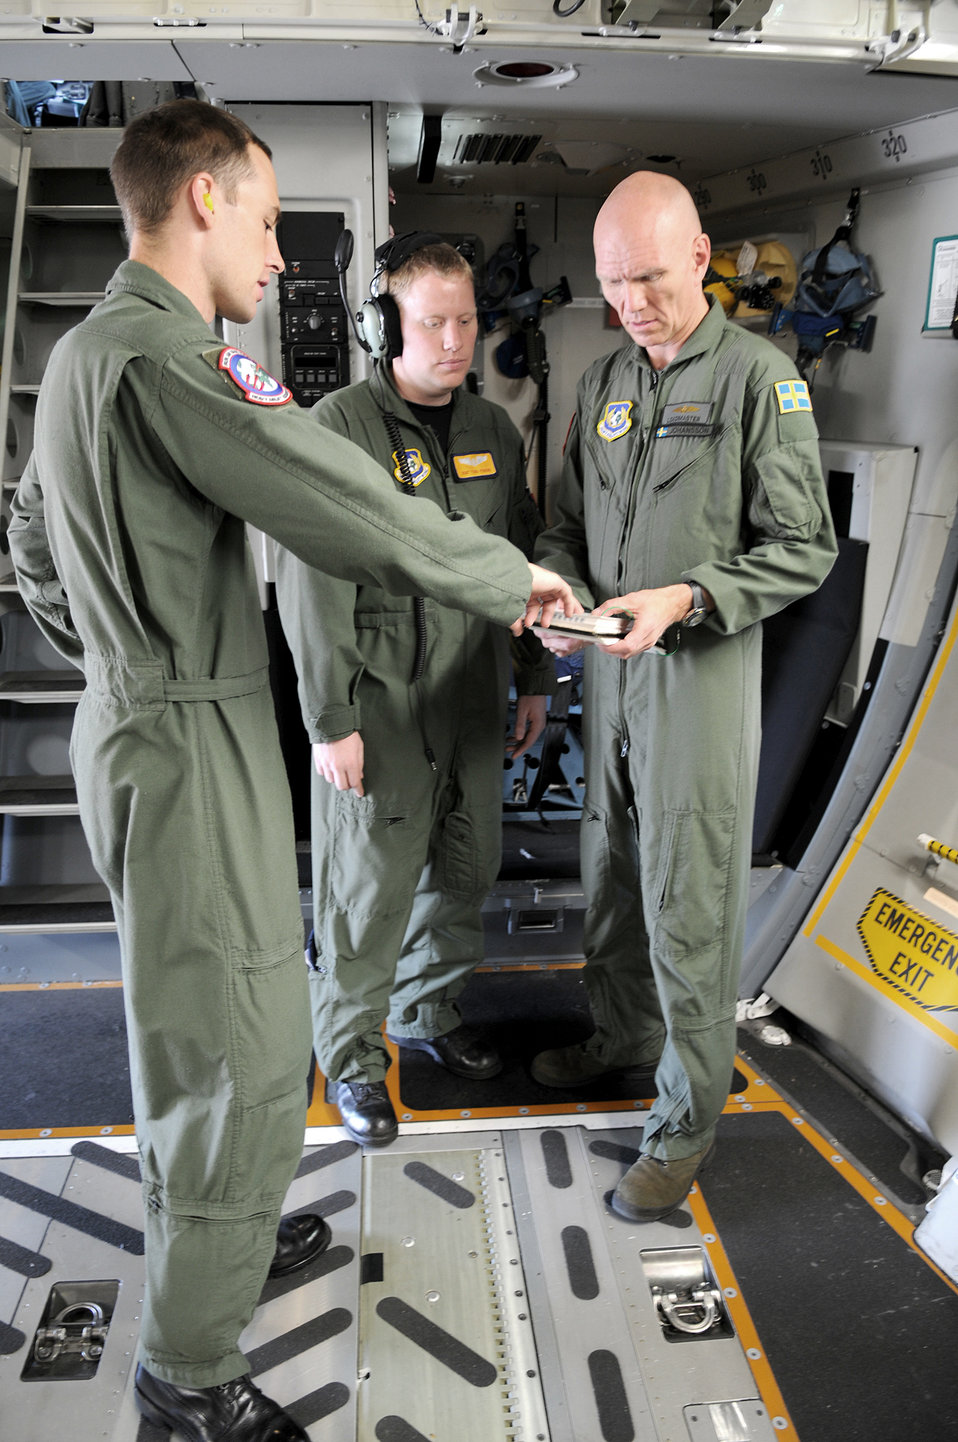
New unit, new way of doing international business

U.S. Air Force Tech. Sgt. Chris Copans (from left), Staff Sgt. Todd Perkins and Swedish 1st Lt. Harry Johansson, C-17 Globemaster III loadmasters assigned to the Heavy Airlift Wing at Papa Air Base, Hungary, go over a preflight checklist Aug. 18 prior to departing Ramstein Air Base, Germany. The HAW, comprising 12 nations, operates independently of NATO's military command and was created to help nations meet global reach commitments.